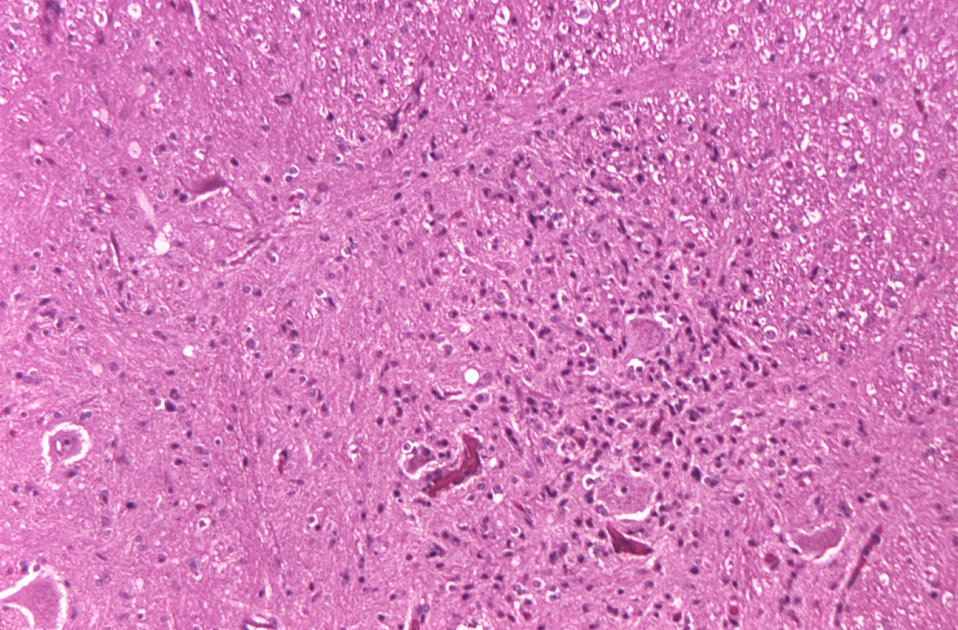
This micrograph depicts the histopathologic changes associated with rabies encephalitis prepared using an H&E stain.